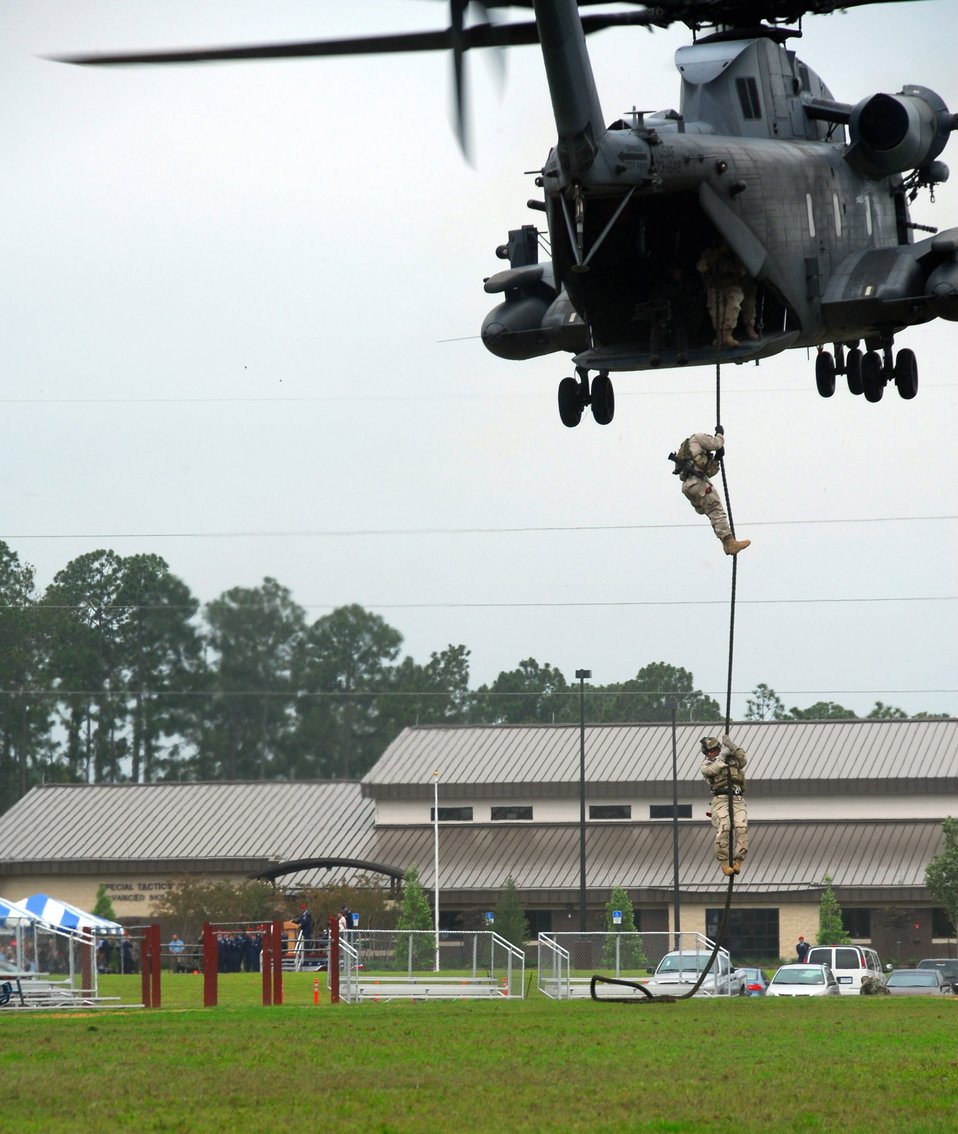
Fallen Airmen memorialized at Hurlburt

Special tactics Airmen fast rope from an MH-53 Pave Low to deliver the colors at the dedication of the Crate Special Tactics Advanced Skills Training Center May 30 at Hurlburt Field, Fla. The center was dedicated in honor of Staff Sgt. Casey Crate, a combat controller from the 23rd Special Tactics Squadron who perished during an operational mission in Iraq in 2005.